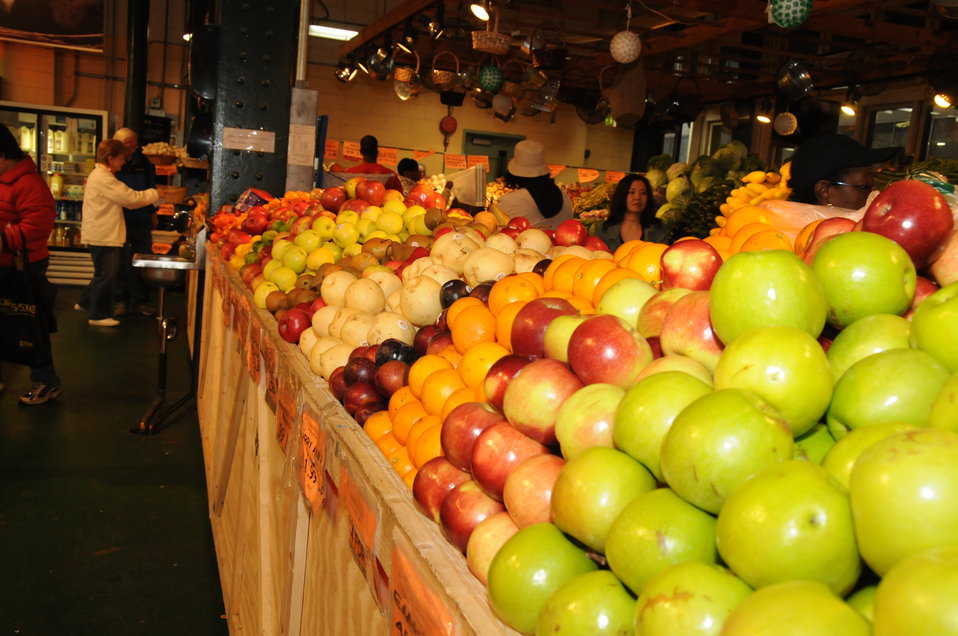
The Reading Terminal Market offers produce fresh from the field to the people of Philadelphia, PA on April 3, 2009. There are Amish specialties, fruits, vegetables, meats, seafood, and poultry. Reading Terminal Market opened for business in 1892 with approximately 78,000 square feet and almost 800 spaces for vendors. The Market was revitalized in the 1990’s and today is still the gastronomic bazaar that its original planners had envisioned. Many of the historic Market stands survived the reconstruction and are once again filled with local produce, fresh eggs, milk, meats, poultry, seafood, handmade crafts, jewelry, and clothing. The Market is home to more than 80 merchants, two of whom are descendants of the original stand holders from a century before.